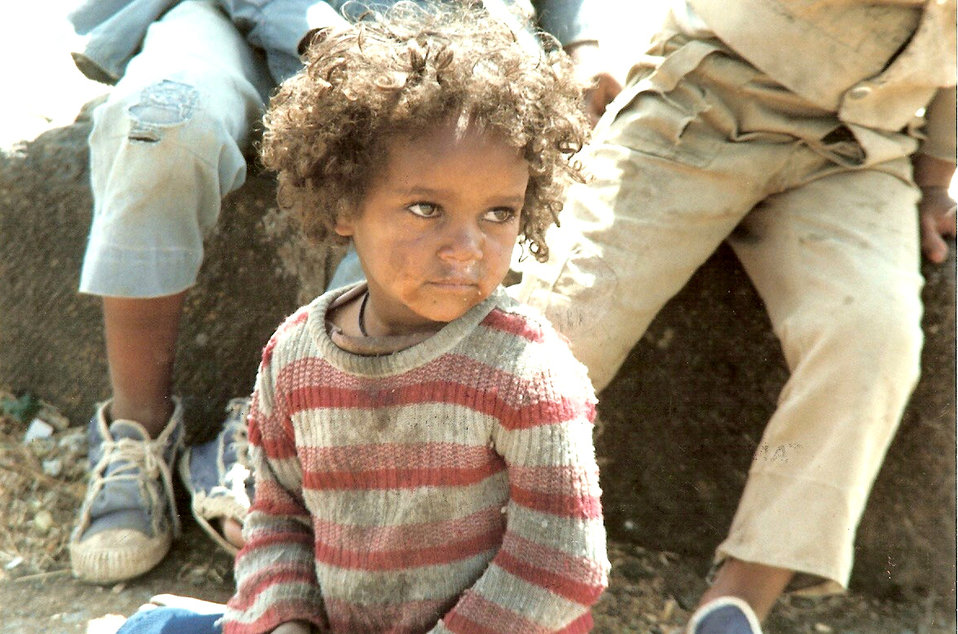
Airman takes journey to live 'American dream'

ADDIS ABABA, Ethiopia -- Kelemwork Tariku-Shotts was brought to America and adopted when she was 5 years old. Her adopted mother found her on the streets here in 1991, and soon after brought her to America to live a life free from poverty and disease. Thirteen years later, she joined the U.S. Air Force and is now an air traffic controller with the 47th Operations Support Squadron at Laughlin Air Force Base, Texas.